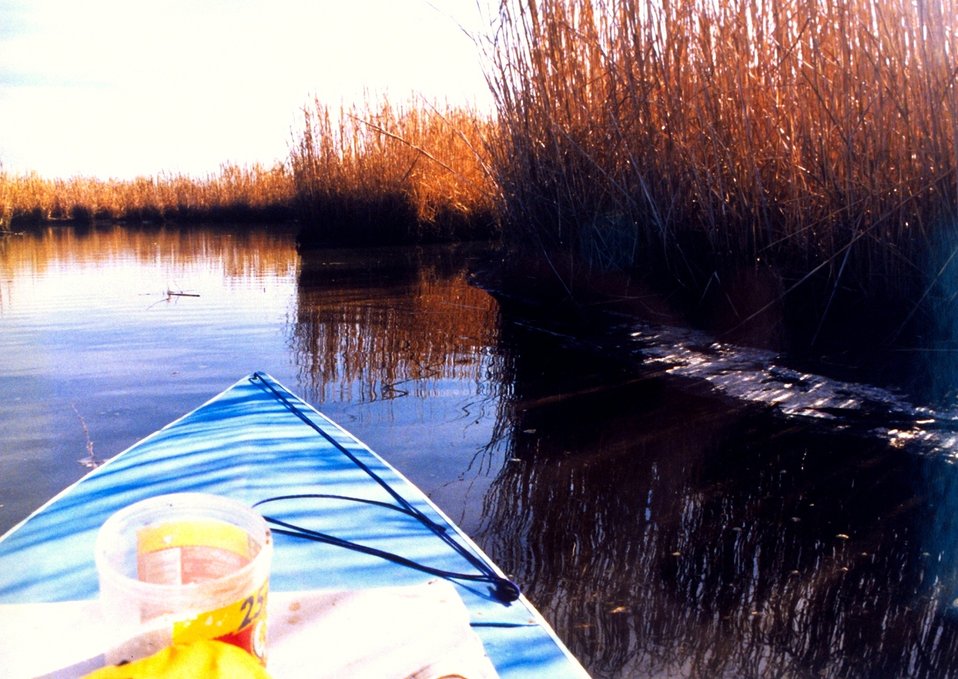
Paddling in a Patuxent marsh.